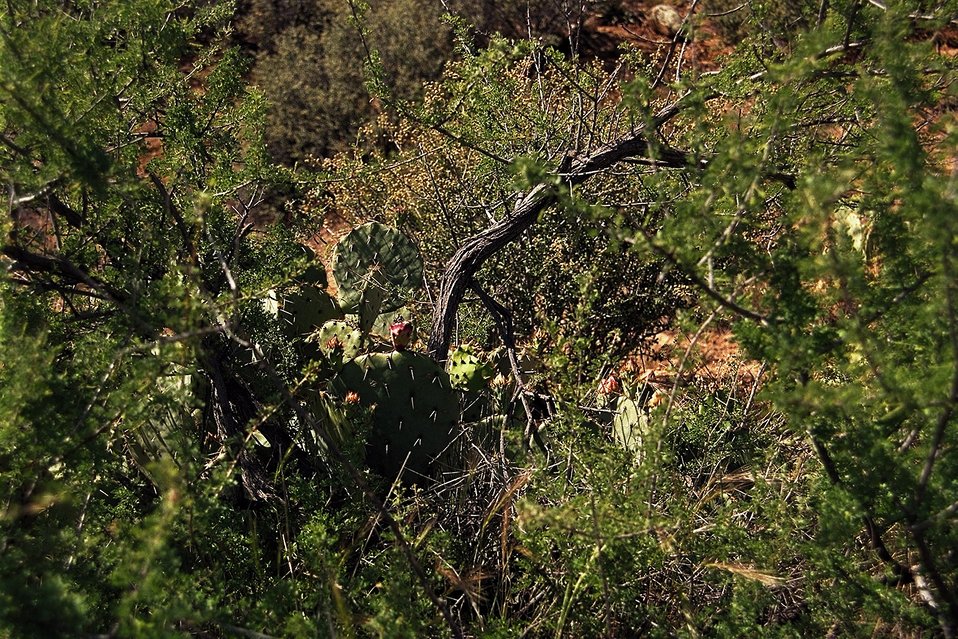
A desert tree and Prickly Pear cacti.